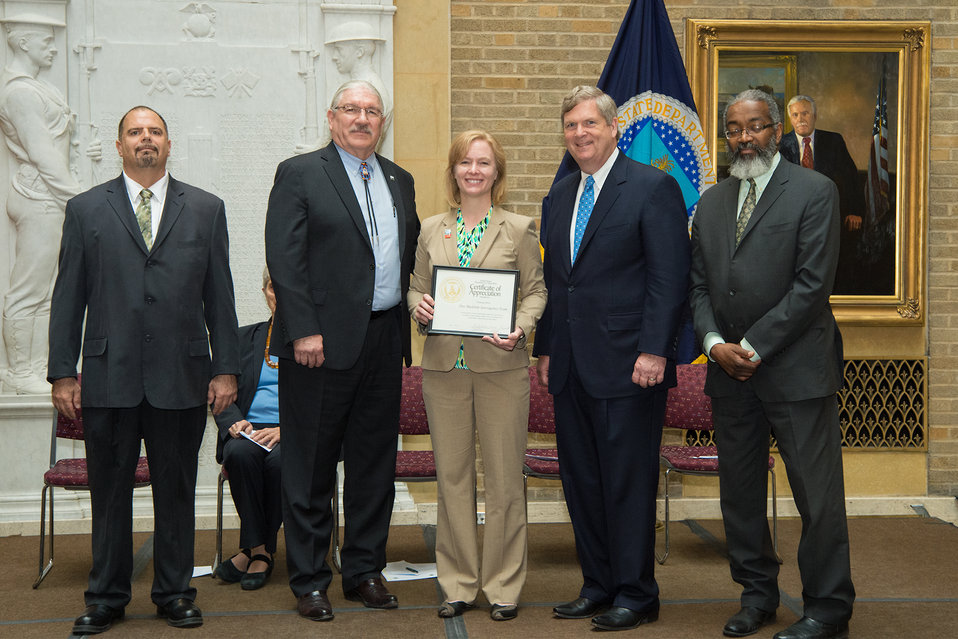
U.S. Department of Agriculture (USDA) Forest Service (FS) Washington Jennifer Eberlien receives the Unsung Hero Award on behalf of the Washington Interagency Response Team from USDA’s Organization of Professional Employees President (OPEDA) Louis Iacoletti, USDA Natural Resources and Environment (NRE) Deputy Under Secretary Arthur “Butch” Blazer, Agriculture Secretary Tom Vilsack and USDA Assistant Secretary for Administration Dr. Gregory Parham at USDA in Washington, D.C. on Wednesday, May 7, 2014.